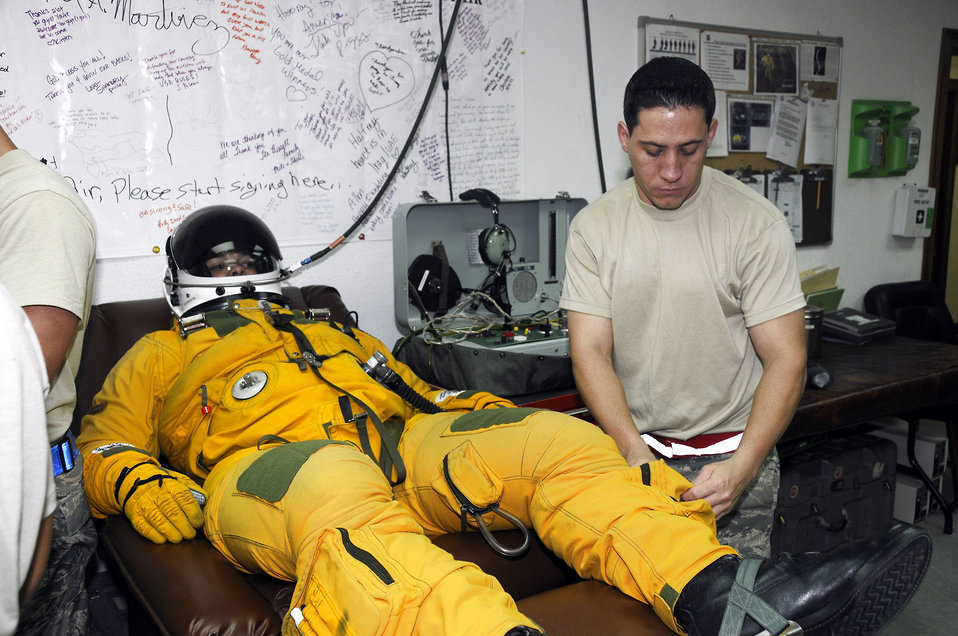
Prepping for high flying

Lt. Col. Brian Dickinson receives a dose of oxygen while Tech. Sgt. Shawn Hansen performs a final inspection of his flight suit Nov. 14 prior to a high-altitude flight from an air base in Southwest Asia. Sergeant Hansen is with the 99th Expeditionary Reconnaissance Squadron Physiological Support Division. Colonel Dickenson is a U-2 Dragonlady pilot with the 99th ERS and is responsible for gathering intelligence in the area of responsibility in support of operations Iraqi and Enduring Freedom.